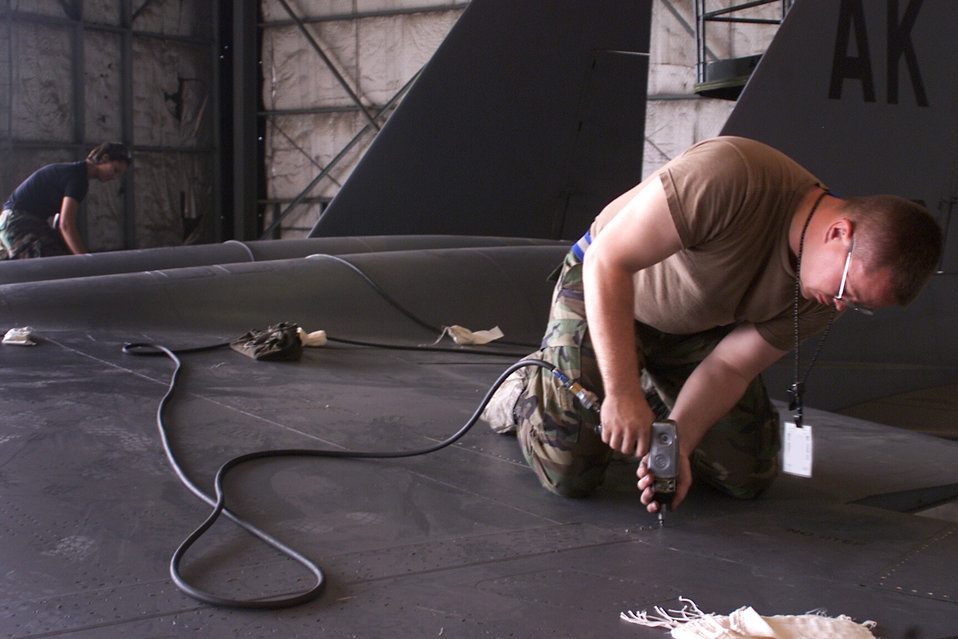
Phase inspection

GWANGJU AIR BASE, South Korea -- Airmen 1st Class Joshua Morgan (foreground) and Megan Corbett depanel an F-15E Strike Eagle for phase inspection at here Sept. 7.